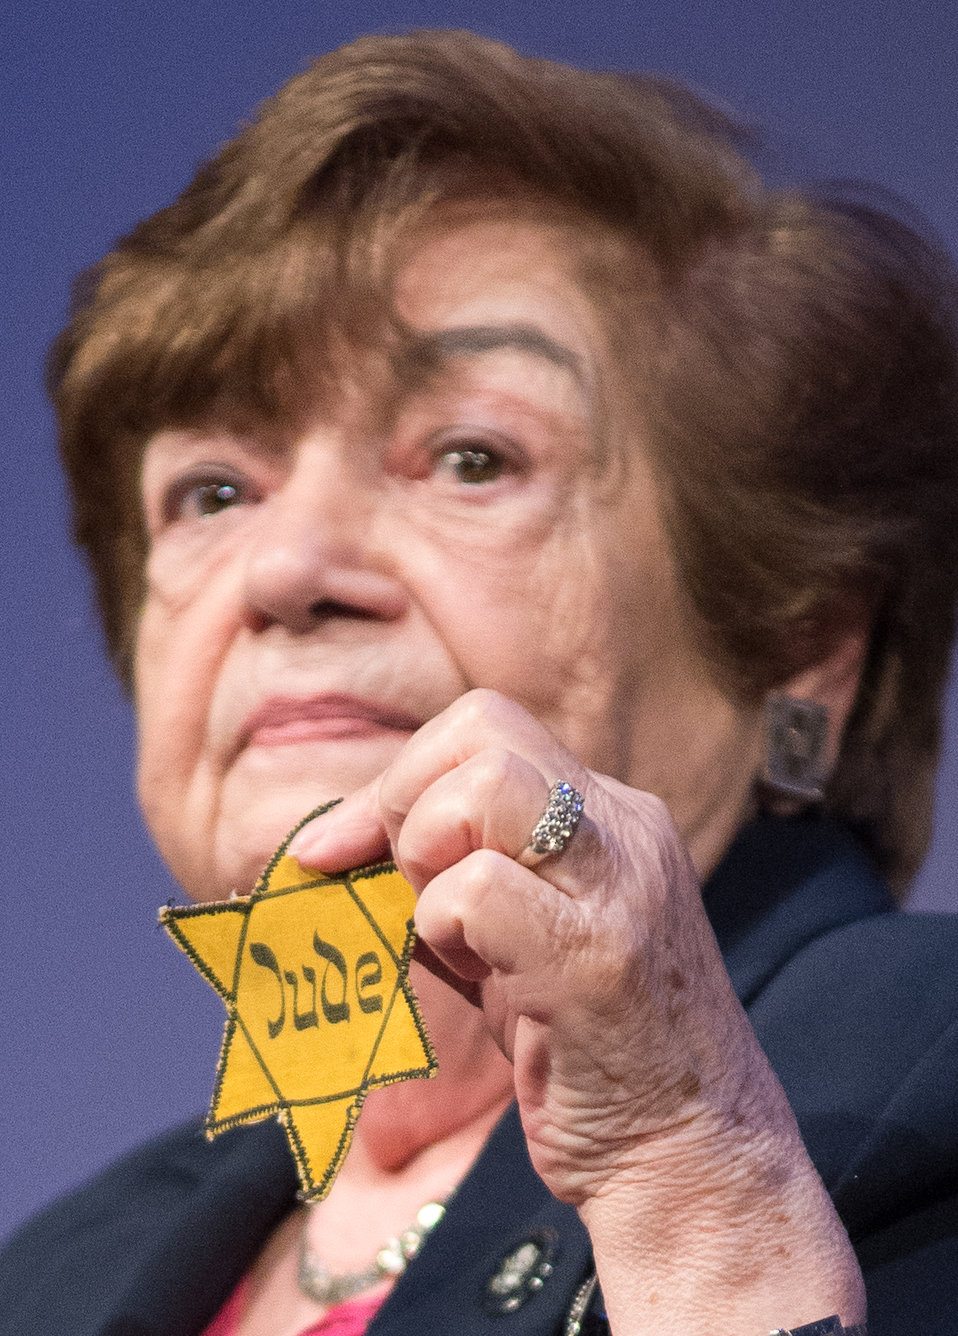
Theresienstadt Concentration Camp Czech Jewish Holocaust Survivor Ela Stein-Weissberger spoke during the 2013 Federal Inter-Agency Holocaust Remembrance Day, at the Lincoln Theater, on Wednesday, April 17, 2013, in Washington, D.C. Ms. Stein-Weissberger talks about her experience of ‘The Night of Broken Glass’, when the Nazi smashed the Stein home. During her imprisonment at Theresienstadt Concentration Camp, she took part in a children’s play ‘Brundibar’ that was part of a German SS propaganda film that showed a model of camp conditions and activities. The film was never released by the German government, but did survive the war. She was shown in the cast, when it was used in the CBS News program – 60 Minutes – ‘The Nazi Deception.’ She also displayed her cloth ‘Jude’ badge that identified her as being Jewish during the Nazi uprising. Since the 1979 President’s Commission on the Holocaust, an annual proclamation signed by the President of the United States recognizes the importance of remembering the atrocities of the Holocaust that should never be forgotten or be ignored.